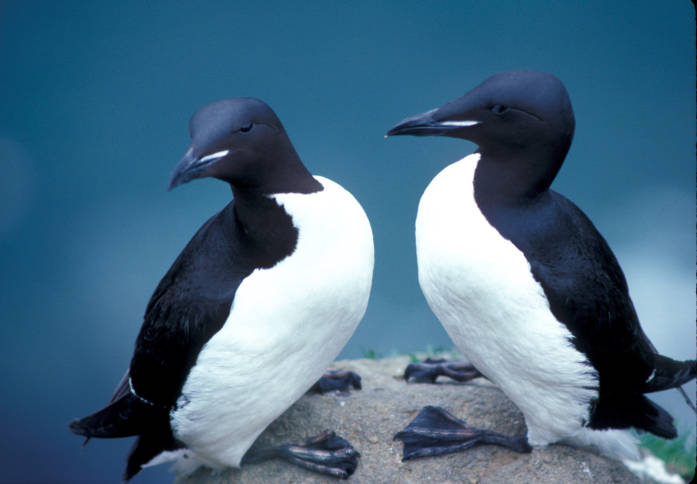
thick-billed murres

Alaska Maritime National Wildlife Refuge